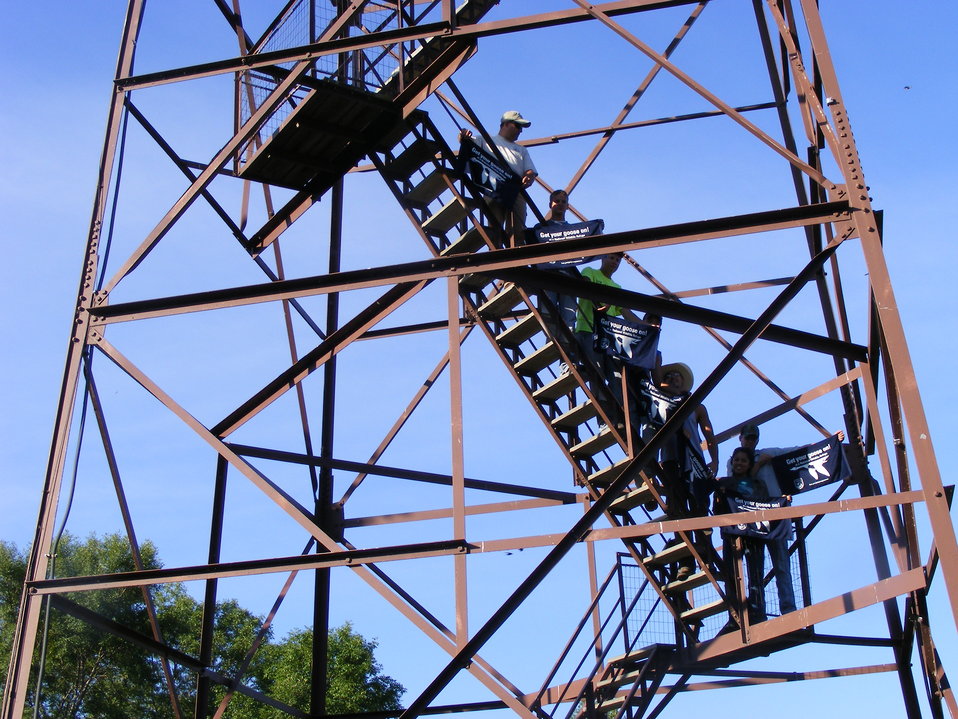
Get Your Goose On!

Climbing the tower at Waubay National Wildlife Refuge in South Dakota.